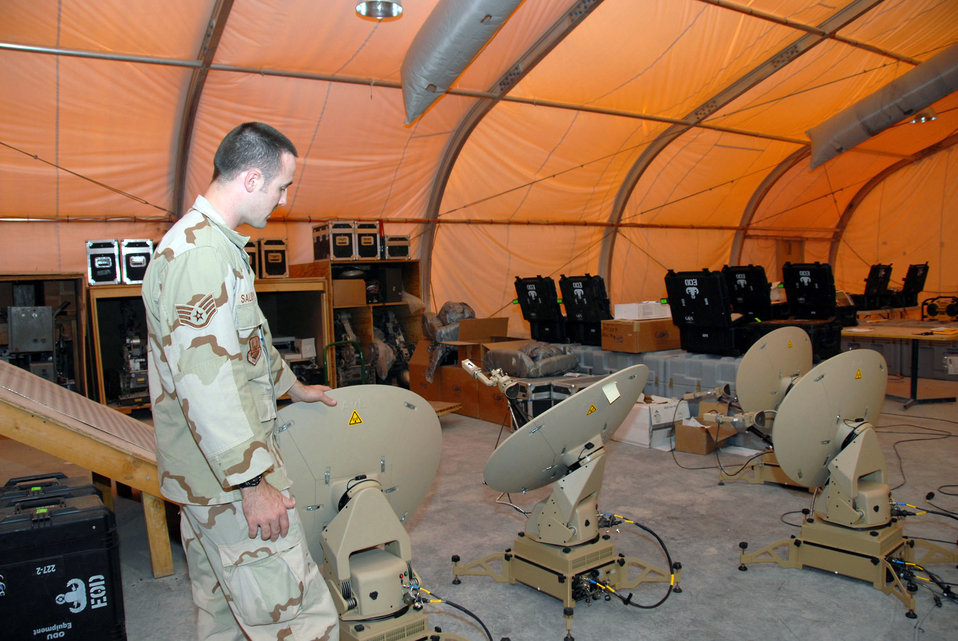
New communications platform helps EOD save lives, time

Staff Sgt. Jonathan Salisbury inspects very small aperture terminal satellite dishes that will be sent to forward-deployed explosive ordnance disposal teams in the area of responsibility July 11 in Southwest Asia. Sergeant Salisbury is assigned to the 379th Expeditionary Civil Engineer Squadron EOD unit.